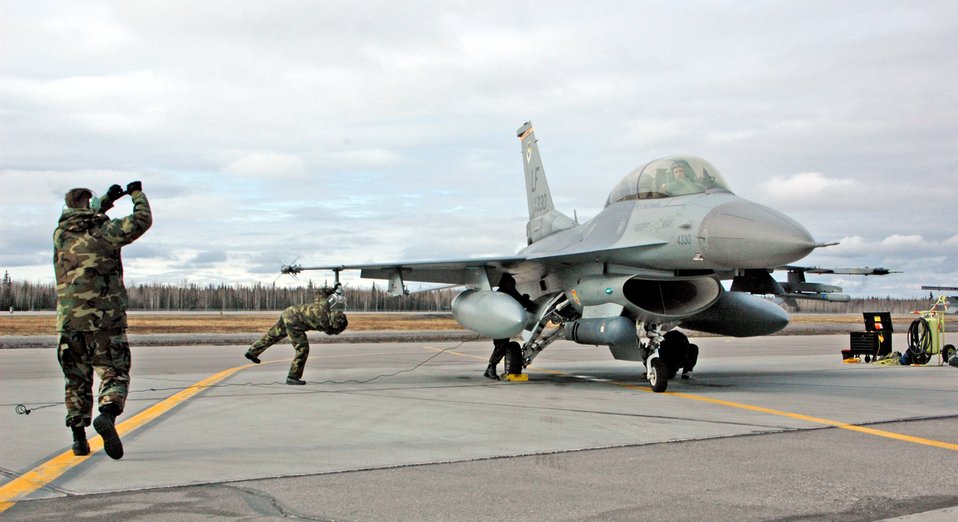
Luke team trains for combat at Red Flag-Alaska

Airmen from the 61st Fighter Squadron catch an F-16 Fighting Falcon on the flightline during Red Flag-Alaska 07-1 April 11 at Eielson Air Force Base, Alaska. Red Flag-Alaska is a Pacific Air Forces-directed field training exercise flown under simulated air combat conditions. It is conducted on the Pacific Alaskan Range Complex with air operations flown out of Eielson and Elmendorf Air Force bases.